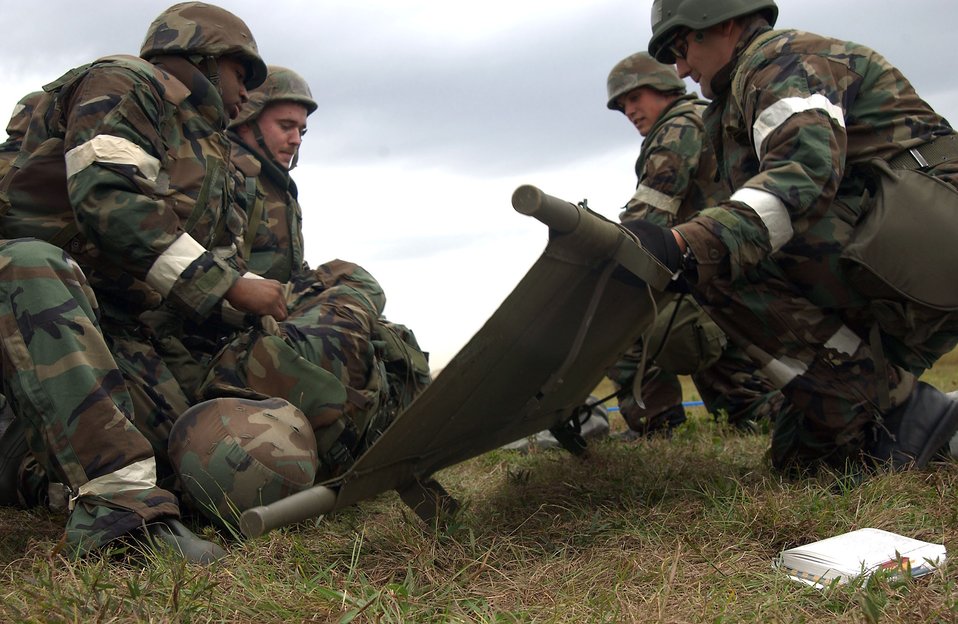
ATSO exercise

MACDILL AIR FORCE BASE, Fla. (AFPN) -- Airmen load a